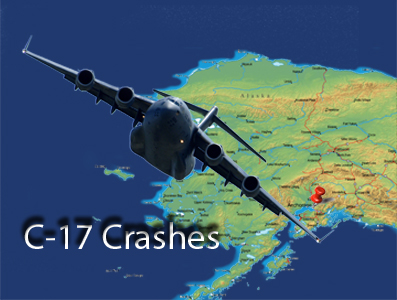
C-17 Crashes